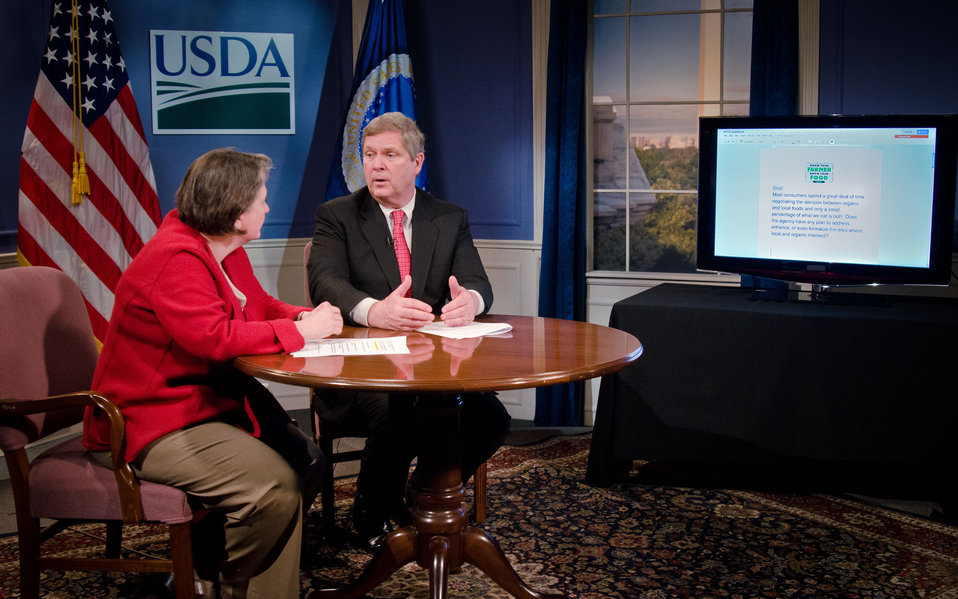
Agriculture Secretary Tom Vilsack and Agriculture Deputy Secretary Kathleen Merrigan respond to a question from 'Grist,' via twitter message (right), during the unveiling of the Know Your Farmer, Know Your Food (KYF) Compass, an interactive web-based document and map highlighting USDA support for local and regional food projects and successful producer, business and community case studies. While hosting a live webinar to highlight USDA's work over the past three years, the Secretaries emphasized how local and regional food systems across the country create additional economic opportunities for farmers, ranchers and food entrepreneurs, expand healthy food access and meet growing customer demand. At the U.S. Department of Agriculture in Washington, D.C., on Wednesday, February 29, 2012.